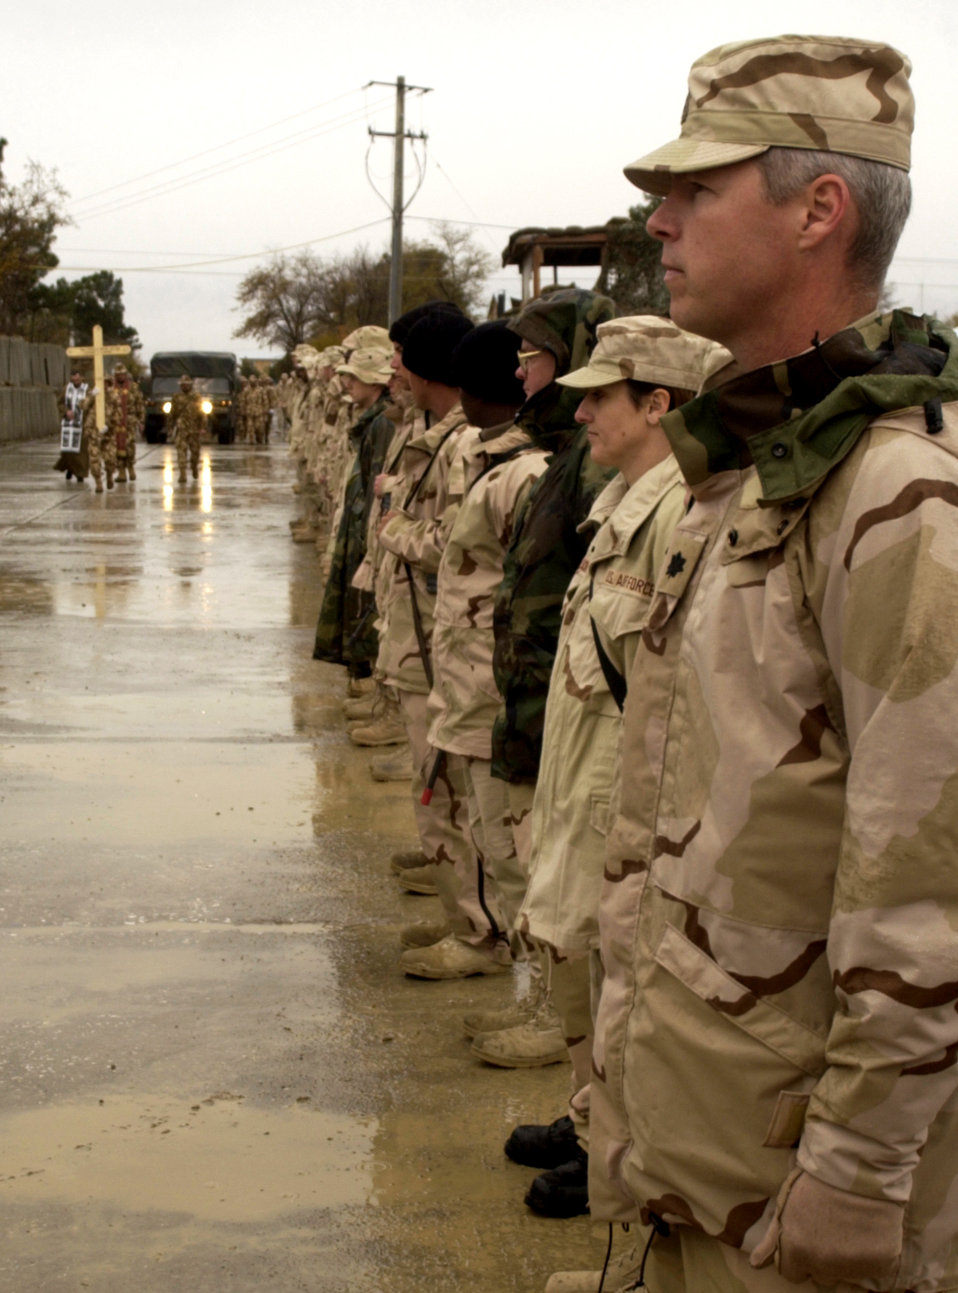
Honoring a fallen ally

BAGRAM AIR BASE, Afghanistan -- Airmen paid final honors Nov. 15 to a Romanian soldier who died in an attack on a coalition convoy Nov. 11 in southern Afghanistan. Coalition airmen and soldiers lined a road here as the body of Sgt. Maj. Mihail Anton Samuila was brought to a Romanian C-130 aircraft.